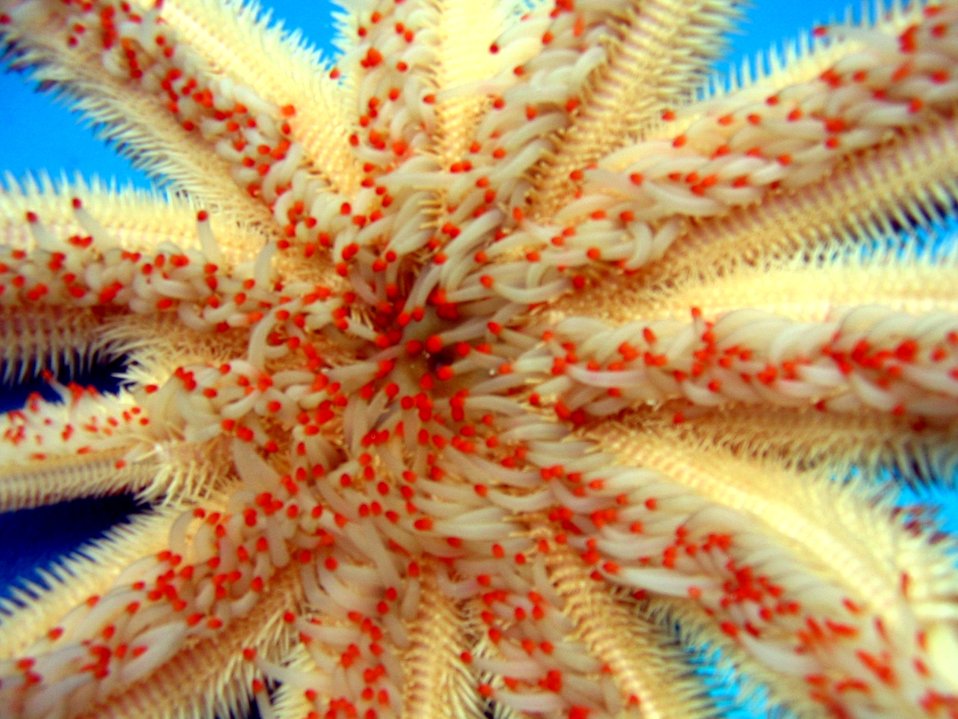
Mouth of Magnificent Star starfish (Luidia magnifica) - note regenerating legs. Tube feet are red-tipped. This starfish species has either ten or eleven arms. They live buried under the sand.